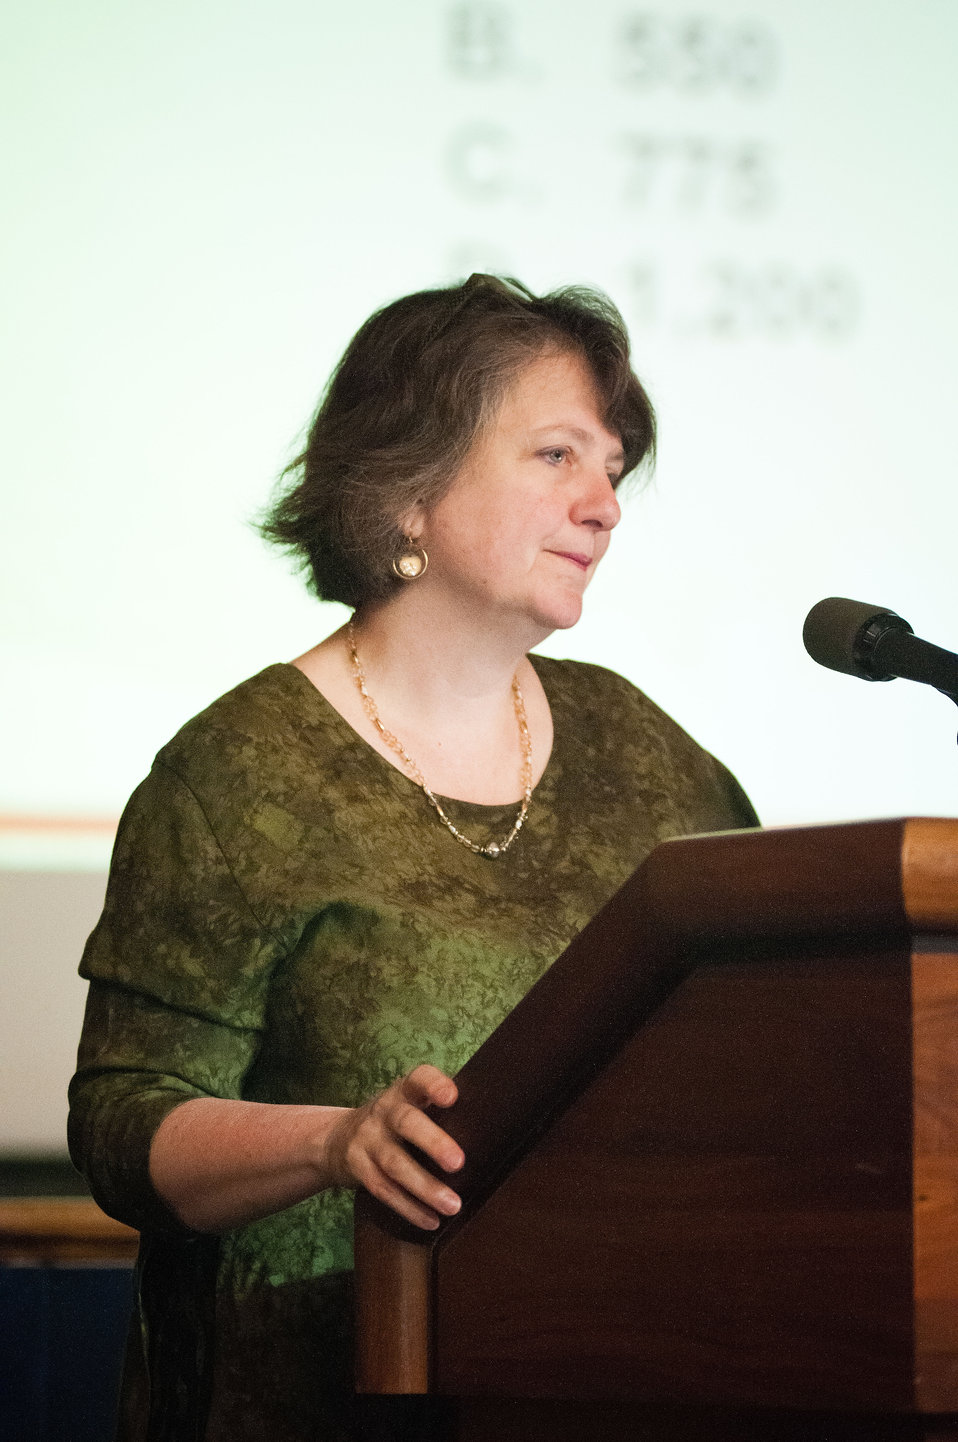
Agriculture Deputy Secretary Dr. Kathleen Merrigan listens to questions posed by U.S. Department of Agriculture (USDA) interns during an information tour held at USDA Jefferson Auditorium in Washington, D.C. on July 26, 2012. Deputy Secretary Merrigan speaks with college and university students across the country in an effort for students to understand the breadth and scope of American Agriculture so they may make a conscious decision on a future in American agriculture.